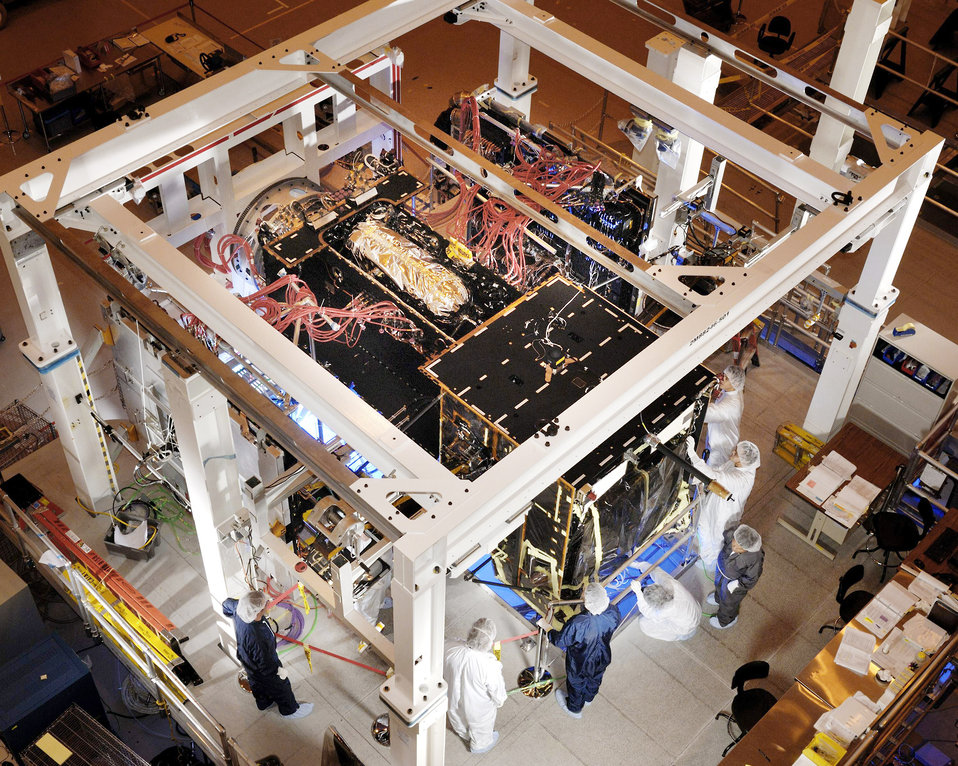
Airmen confirm satellite completes integrated system test

Shown here is the second Space-Based Infrared System geosynchronous orbit spacecraft during baseline integrated system test Feb. 10, 2010, at Lockheed Martin's facilities in Sunnyvale, Calif.